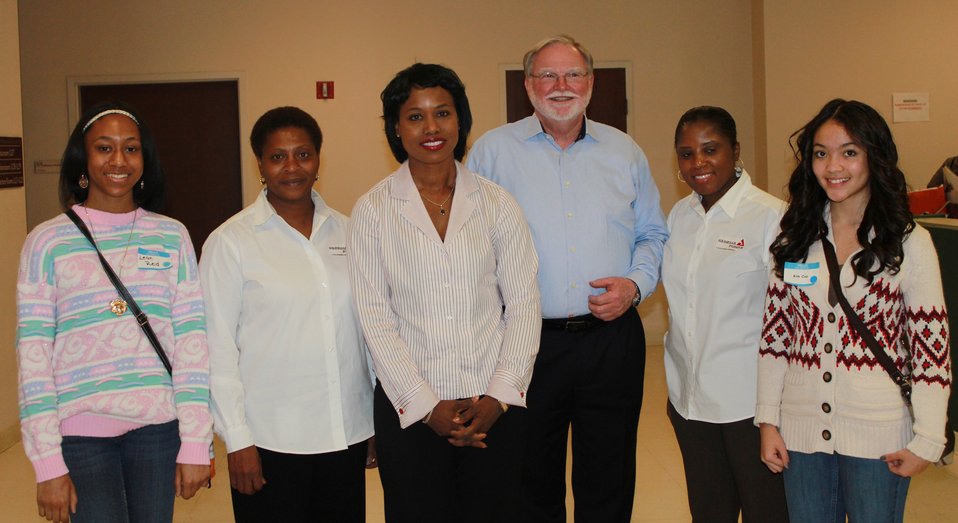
Spelman Girls Institute Nov 2012

Dot Harris joins Spelman leadership after the event.